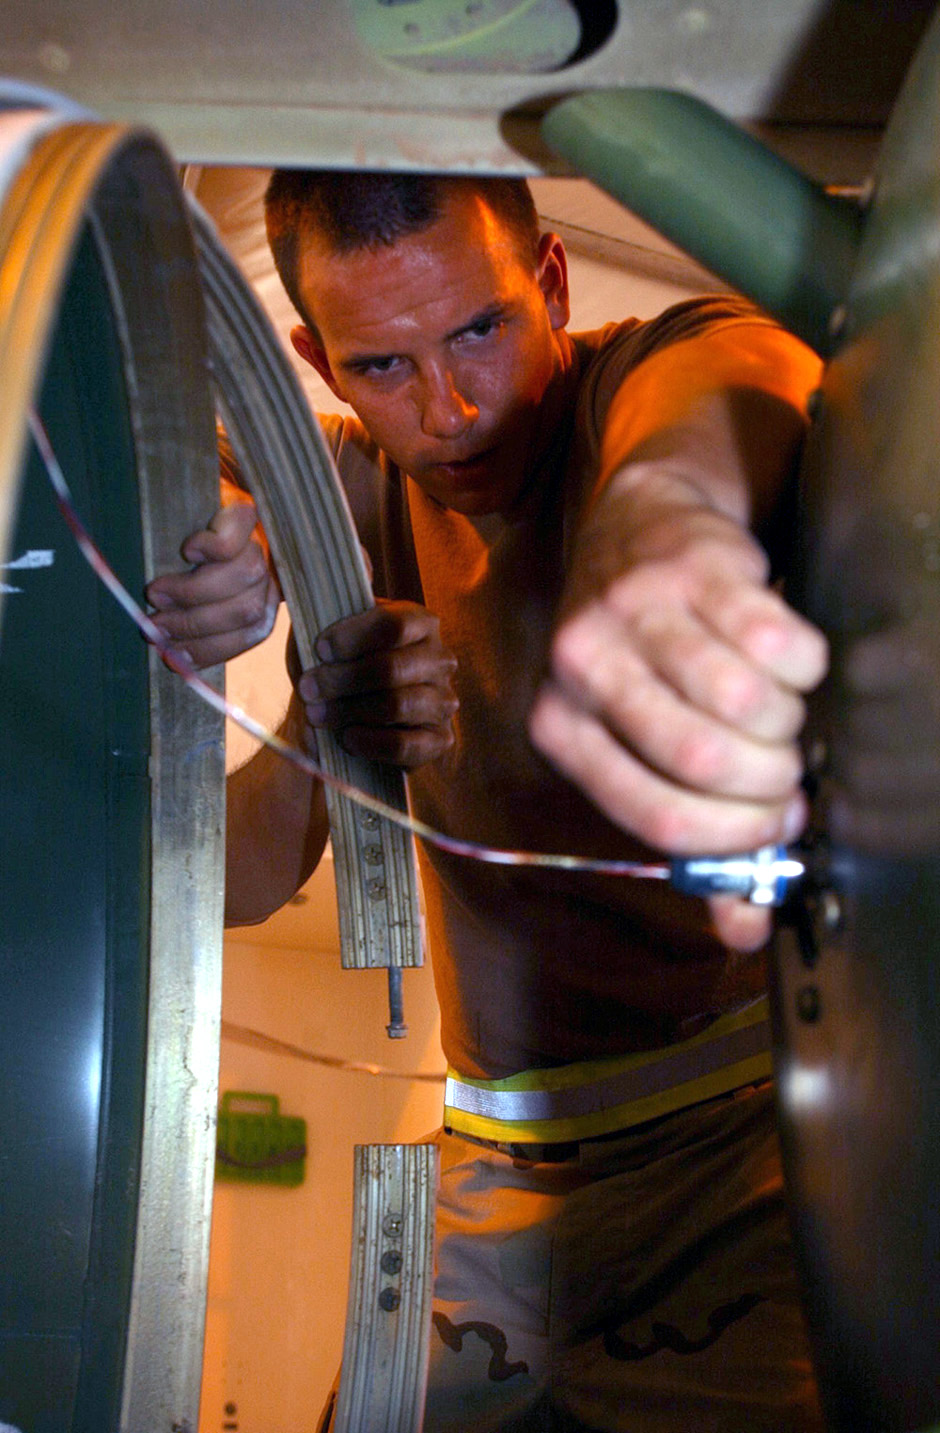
Tank build up

OPERATION IRAQI FREEDOM -- Airman 1st Class Donald Slayton, an F-16 crew chief deployed as part of a tank build-up team from Shaw Air Force Base, S.C., reconnects a wiring harness before buttoning up an auxilliary fuel tank. The tank was repaired after a scheduled inspection turned up defects.